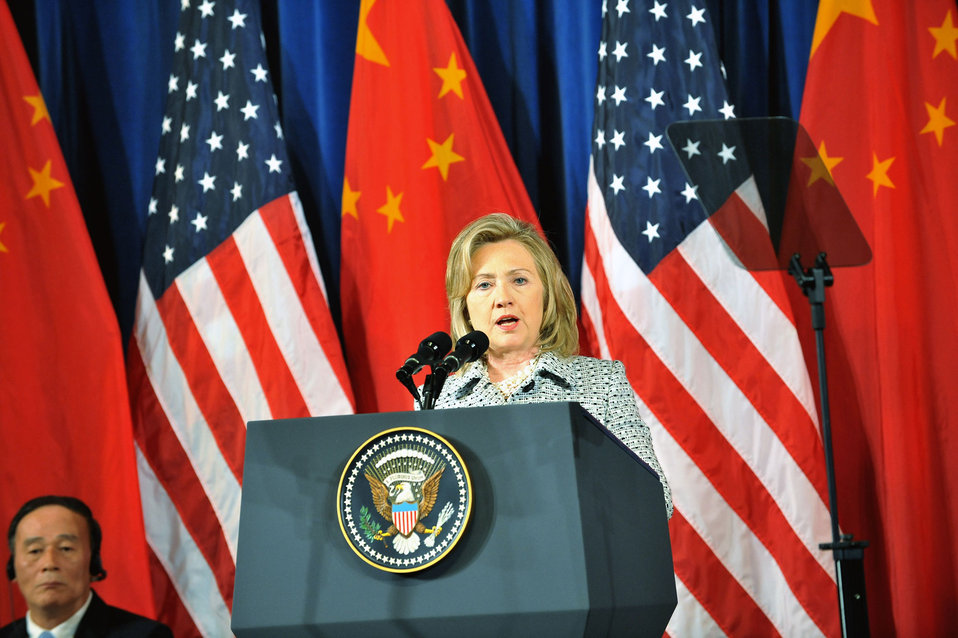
Secretary Clinton Delivers Remarks at Opening Session of U.S.-China SandED

U.S. Secretary of State Hillary Rodham Clinton delivers remarks at the Opening Session of the U.S.-China Strategic and Economic Dialogue at the U.S. Department of Interior in Washington, D.C., on May 9, 2011.